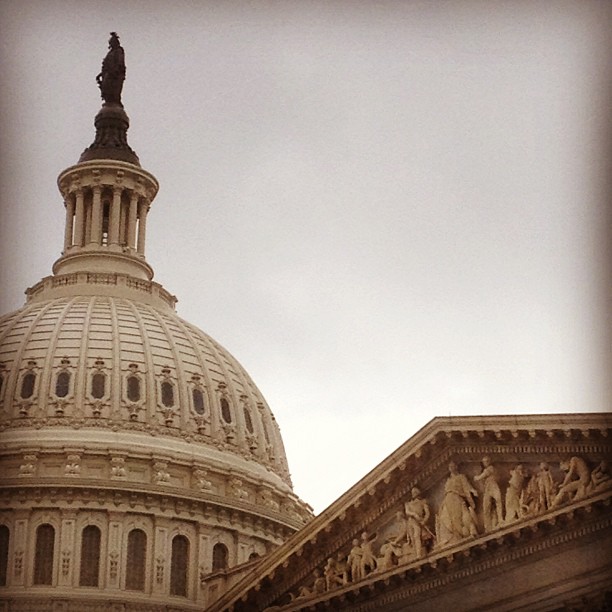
Statue of Freedom scaffold removal completed.